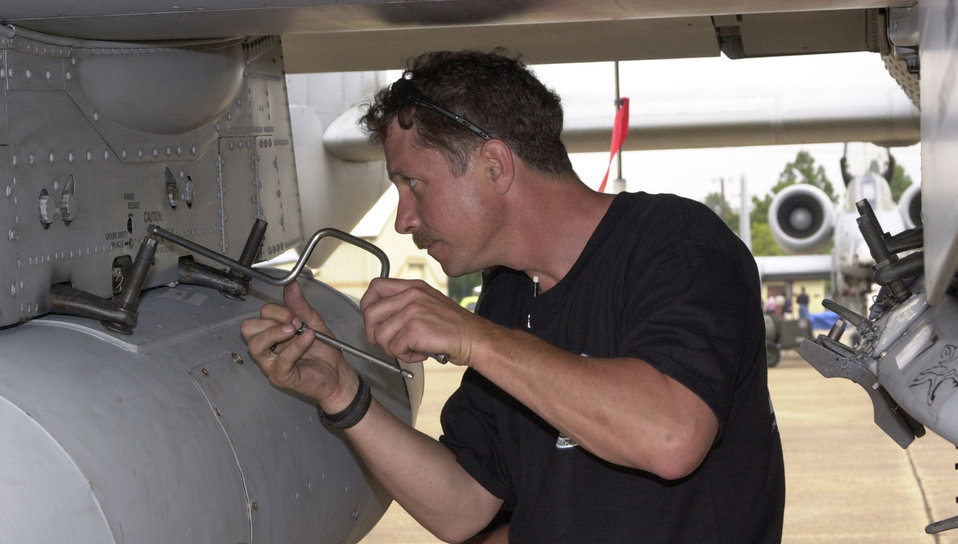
Stormy competition

ALEXANDRIA, La. -- Tech. Sgt. Johnny Egloff removes a travel pod from an A-10 Thunderbolt II that had flown here for Hawgsmoke 2004, a biannual A-10 bombing and tactical gunnery competition. Severe weather canceled the competition April 30. Sergeant Egloff is an aircraft structural mechanic with the 917th Maintenance Squadron at nearby Barksdale Air Force Base.